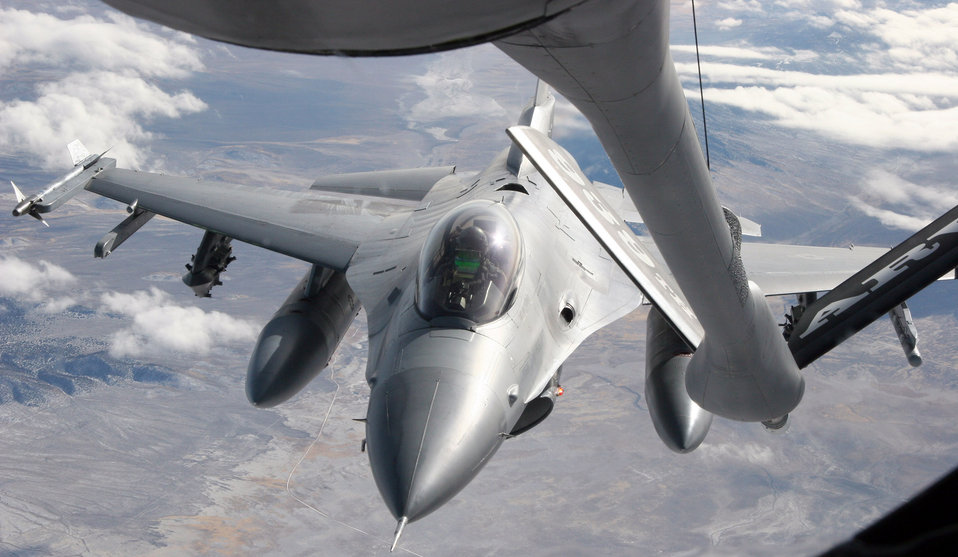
Making contact

OVER UTAH (AFPN) -- An F-16 Fighting Falcon aircraft refuels with a KC-135 Stratotanker. The F-16 is with the 419th Fighter Wing at Hill Air Force Base, Utah. The KC-135 is with the 939th Air Refueling Wing in Portland, Ore.